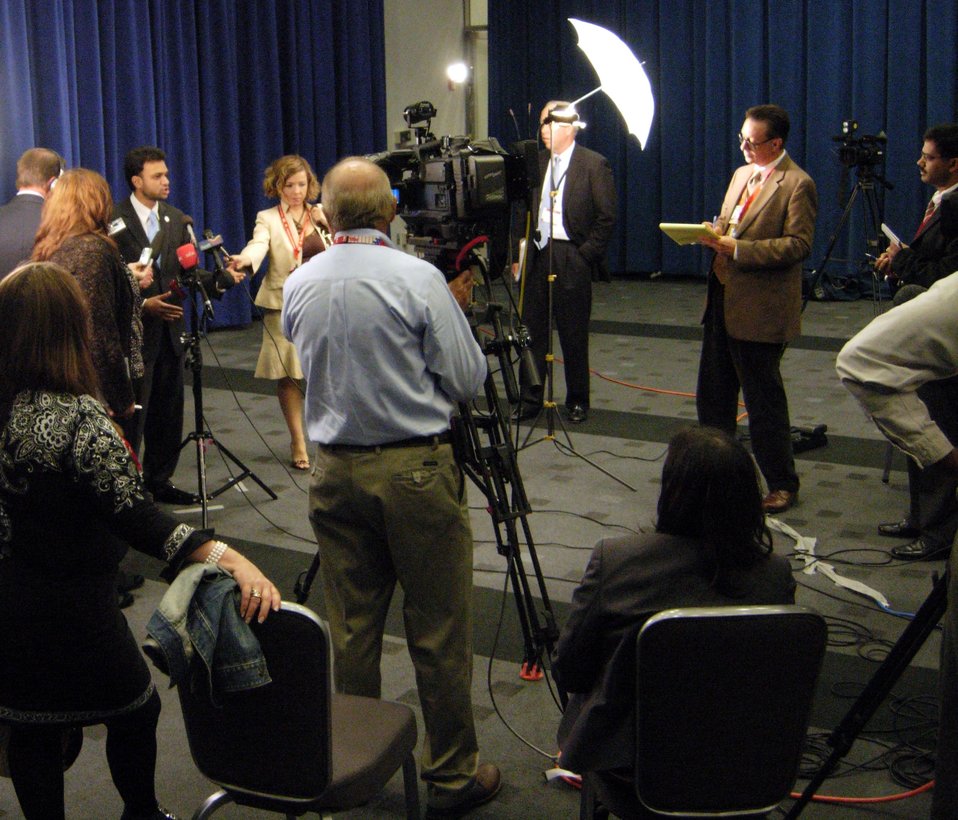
Special Envoy Hussain Specialist Takes Questions

Special Envoy to the Organization of the Islamic Conference Rashad Hussain takes questions at the Presidential Summit on Entrepreneurship, Washington, D.C., April 27, 2010.